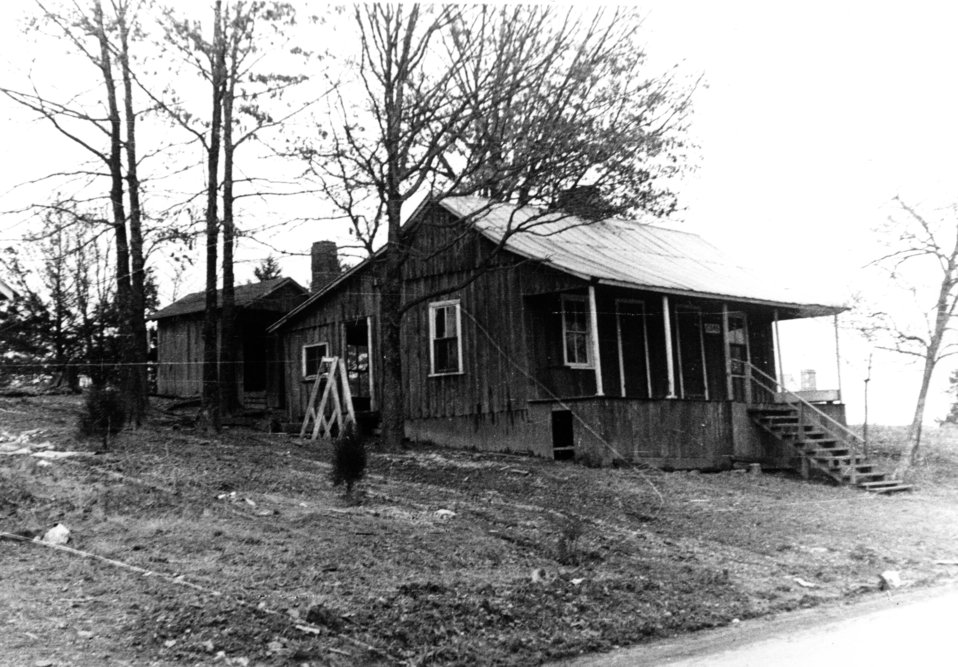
Early settlers at Oak Ridge